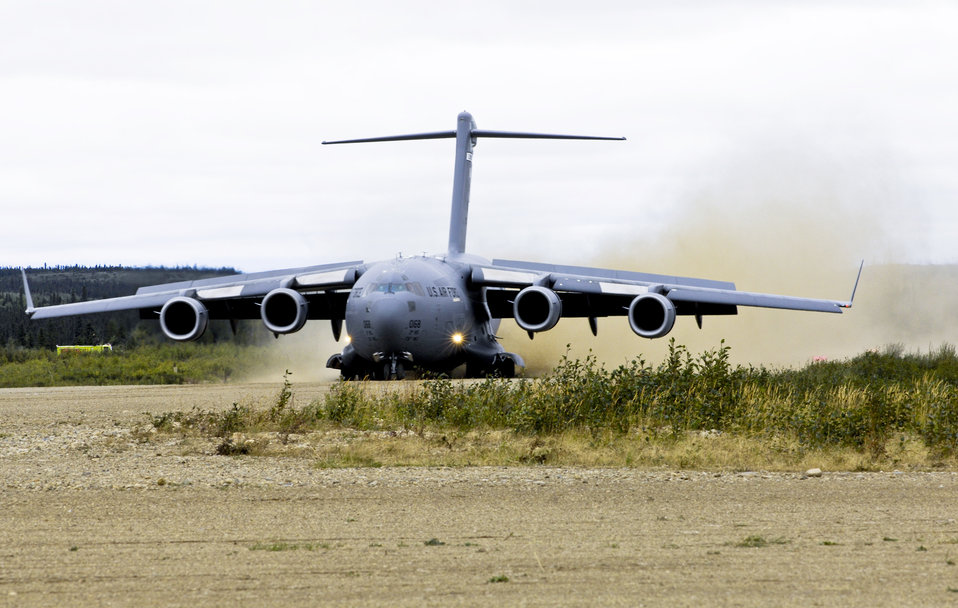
Elmendorf Airmen support Army's Operation Arctic Response

A C-17 Globemaster III executes a semiprepared runway operation landing Aug. 24 at an unimproved landing strip near Elmendorf Air Force Base, Alaska. Airmen from the 517th Airlift Squadron and 249th Airlift Squadron participated in the Army's Operation Arctic Response to help deploy 120 Soldiers and supplies to the remote site.